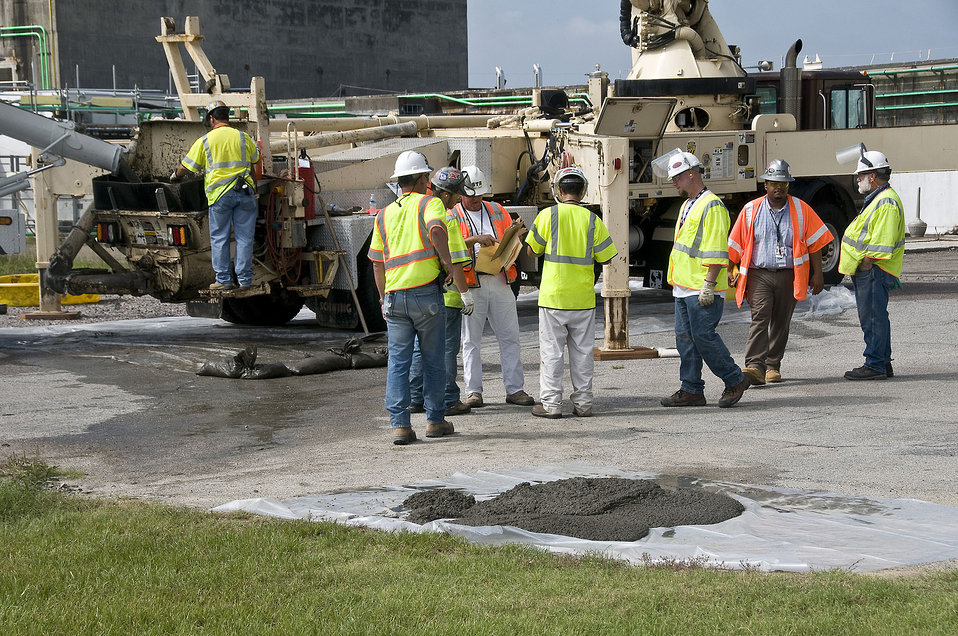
A Recovery Act Footprint: Savannah River Site is Opening Land for Future Missions

By September 2012, SRS will have completed cleanup of more than 75 percent of the site. In addition to freeing up lands for future work early, accelerating the cleanup reduces the overall lifecycle costs of the cleanup program.